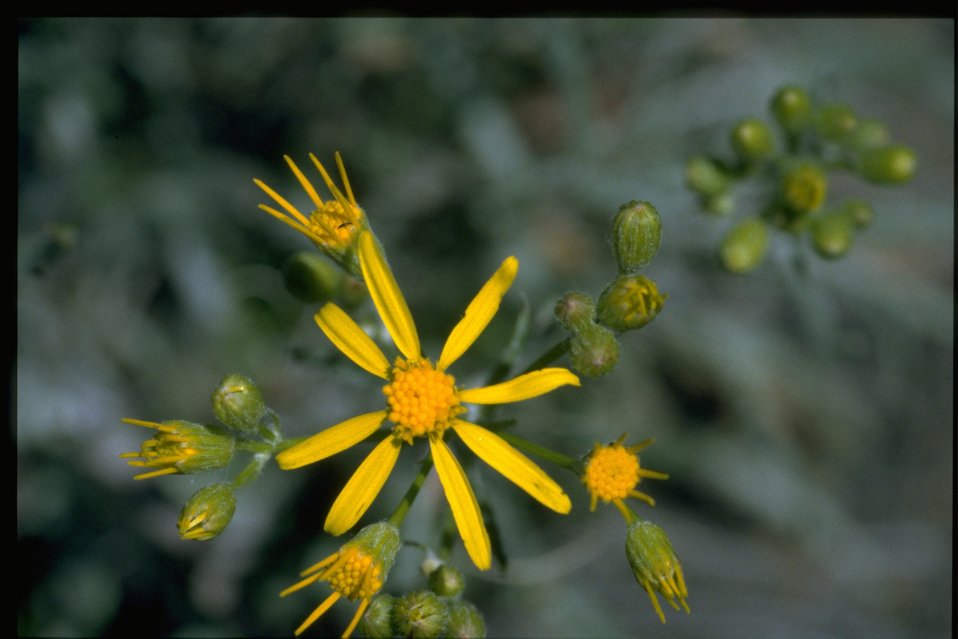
Closeup shot of western groundsel (Senecio integerrimus)